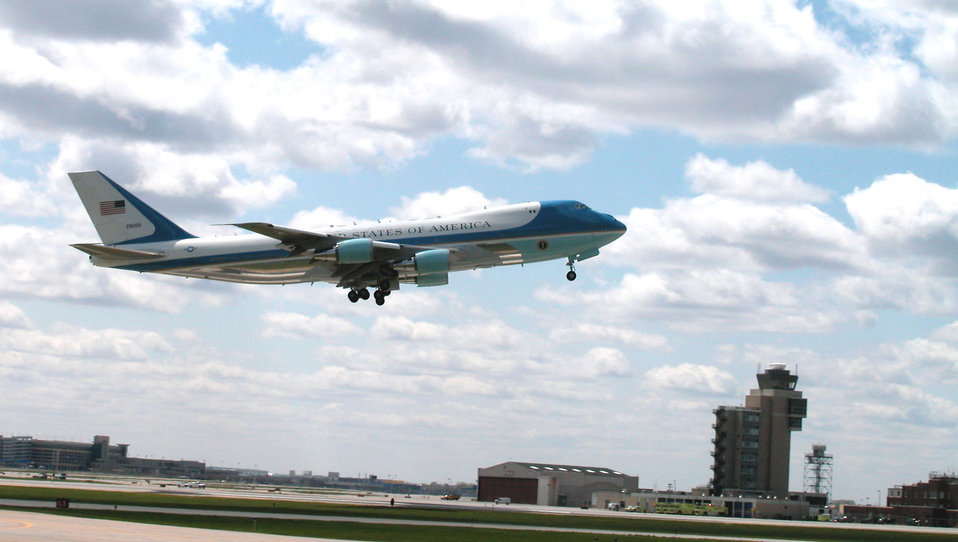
Elite Air Force unit transports former president's body

A blue-and-white painted military VC-25, a 747-model jet like those used to transport President Bush, will fly Ford's casket from California to various honor ceremonies.